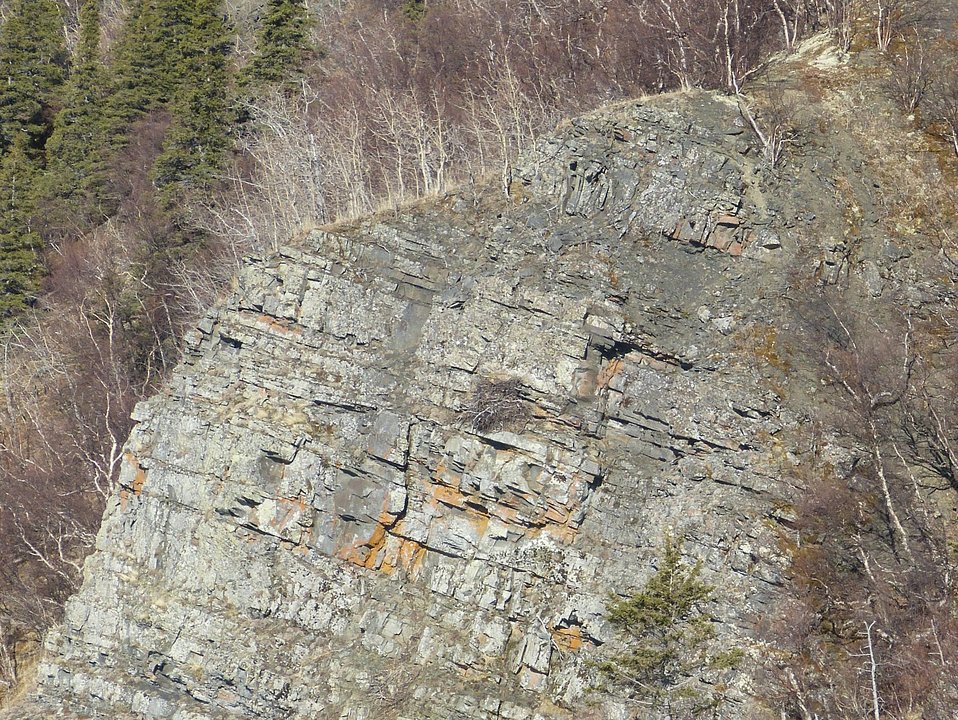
Golden Eagle nest KSowl

Golden Eagle nest, Kilbuck Mountains on Yukon Delta National Wildlife Refuge

Photo credit: Kristine Sowl,
USFWS, YDNWR